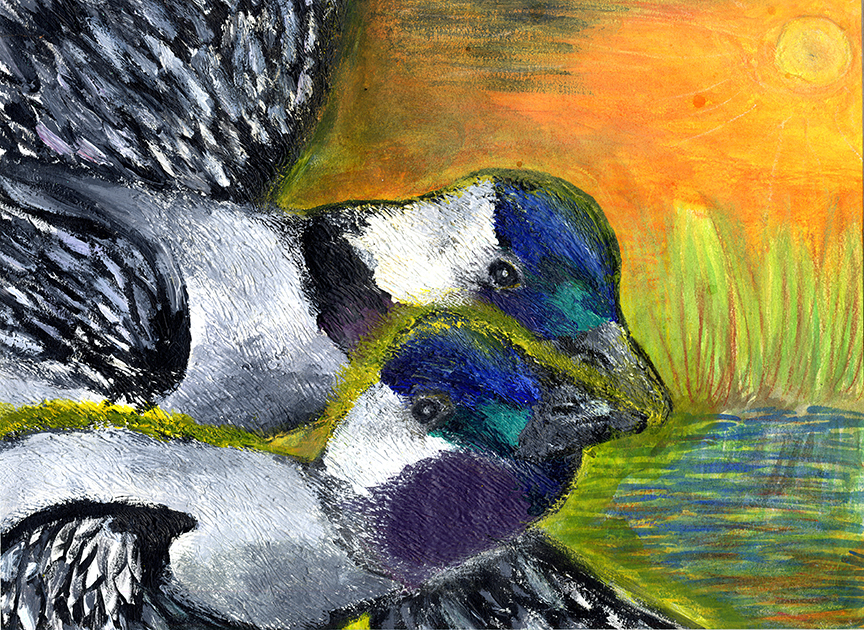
JRDuck2013HI

2013 Junior Duck Stamp Best of Show-Hawaii